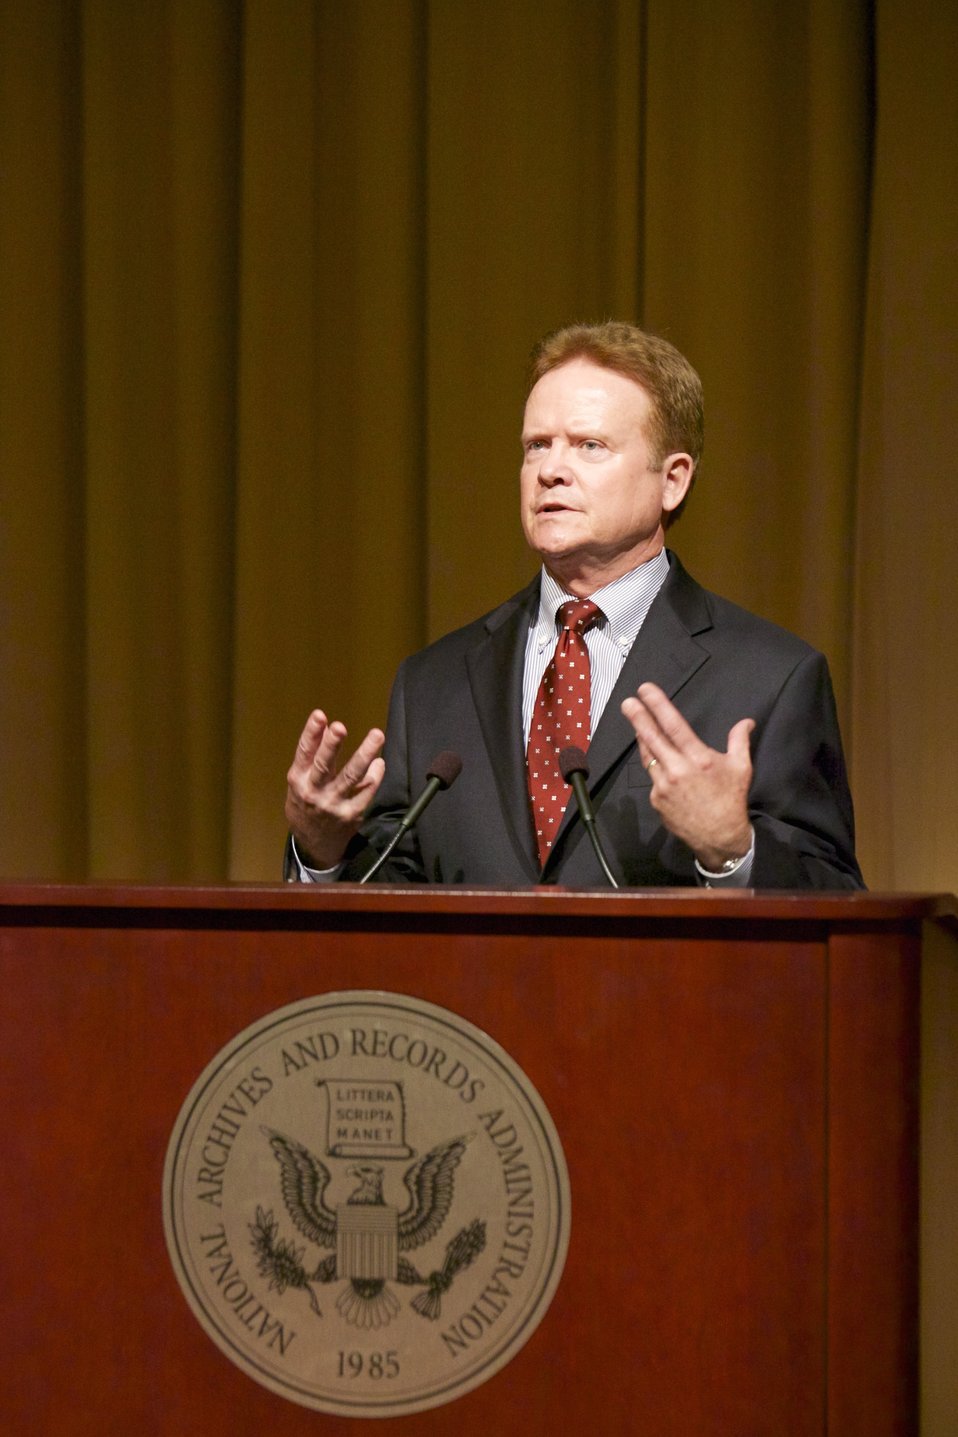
I Heard My Country Calling: A Memoir; James Webb, Former Senator and author, discusses his book